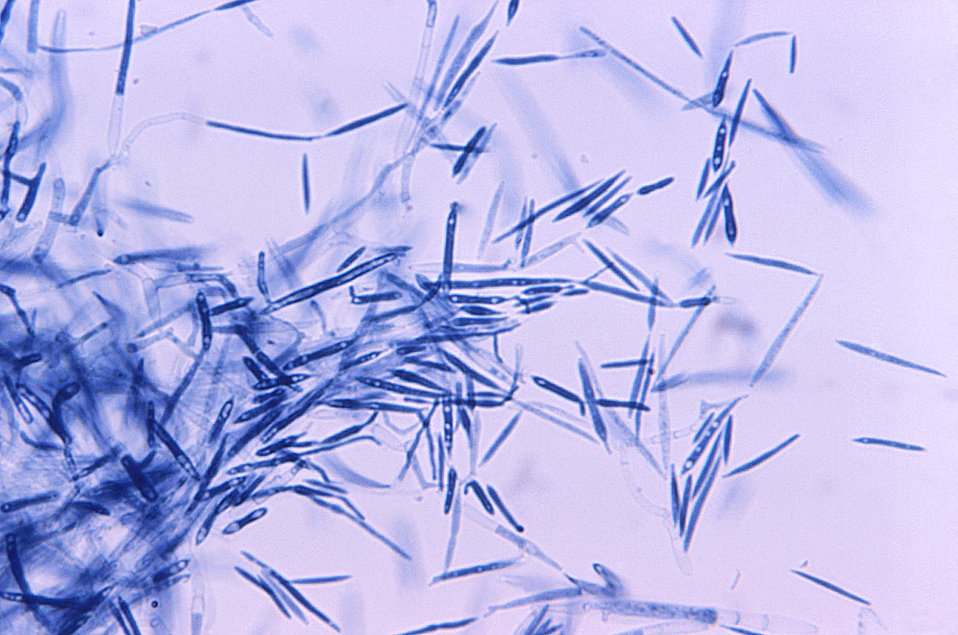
Magnified 500X, this photomicrograph revealed some of the ultrastructural morphology displayed by the smut fungus, Ustilago maydis. In this particular view, numerous haploid sporidia are visible, as well as the organism's septate hyphae.